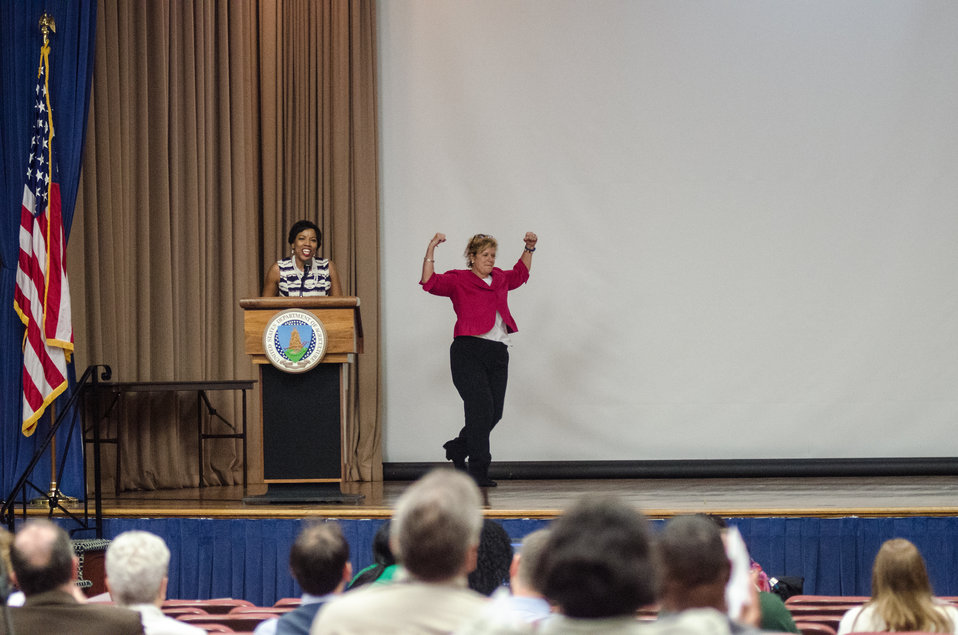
Senior leaders make a stage entrance to the theme of “Rocky” during the U.S. Department of Agriculture’s (USDA) Rural Development (RD) 2nd Annual Cultural Transformation kickoff opening ceremony and forums, themed “Employees Influencing Change,” on Tuesday, Aug. 13, 2013 at USDA in Washington, D.C.